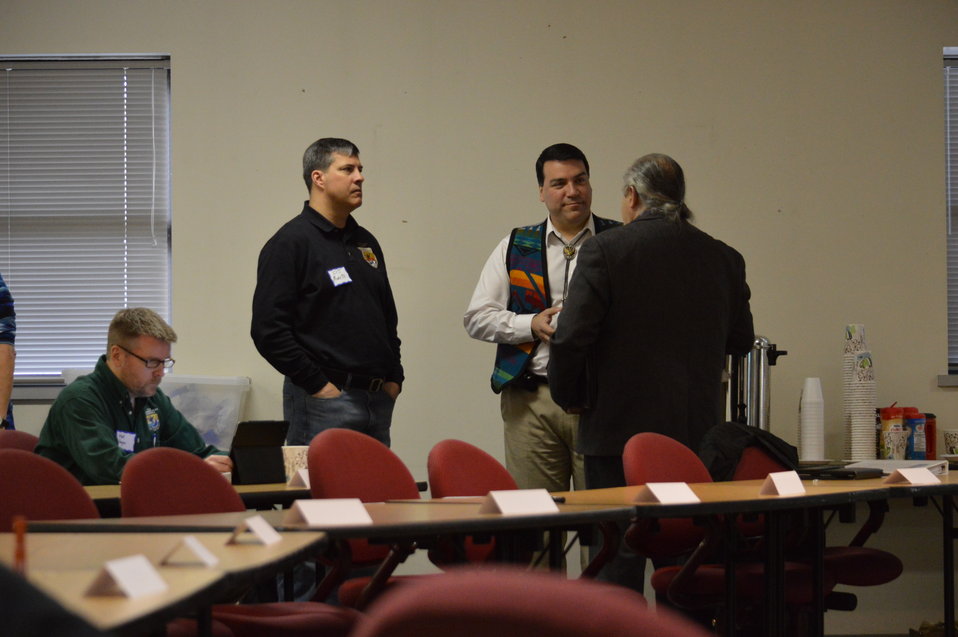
Eagle Summit III in Denver, Colorado on March 20, 2014 at the Rocky Mountain Arsenal National Wildlife Refuge.